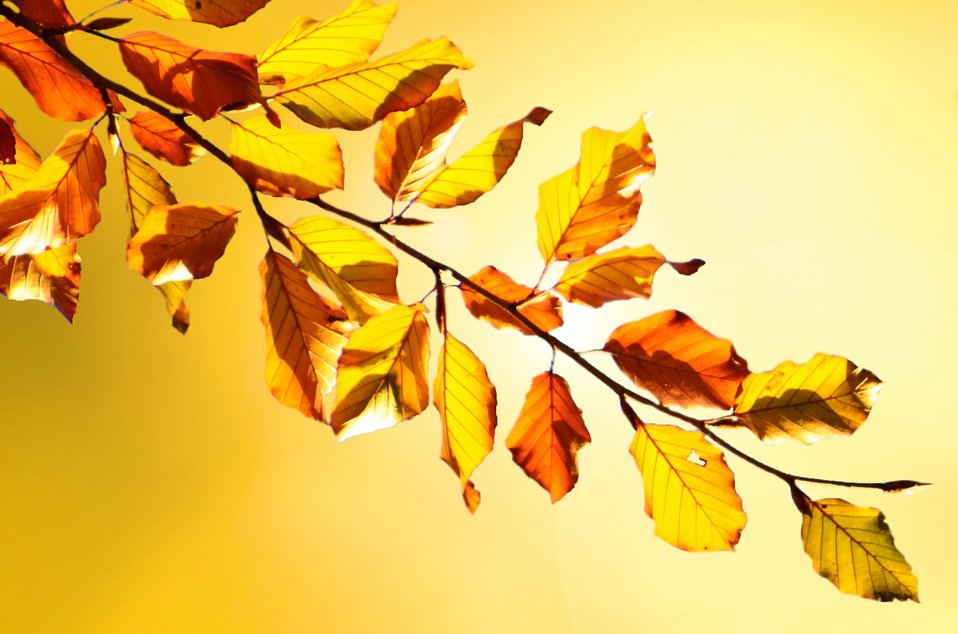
Autumn leaves - illustration.